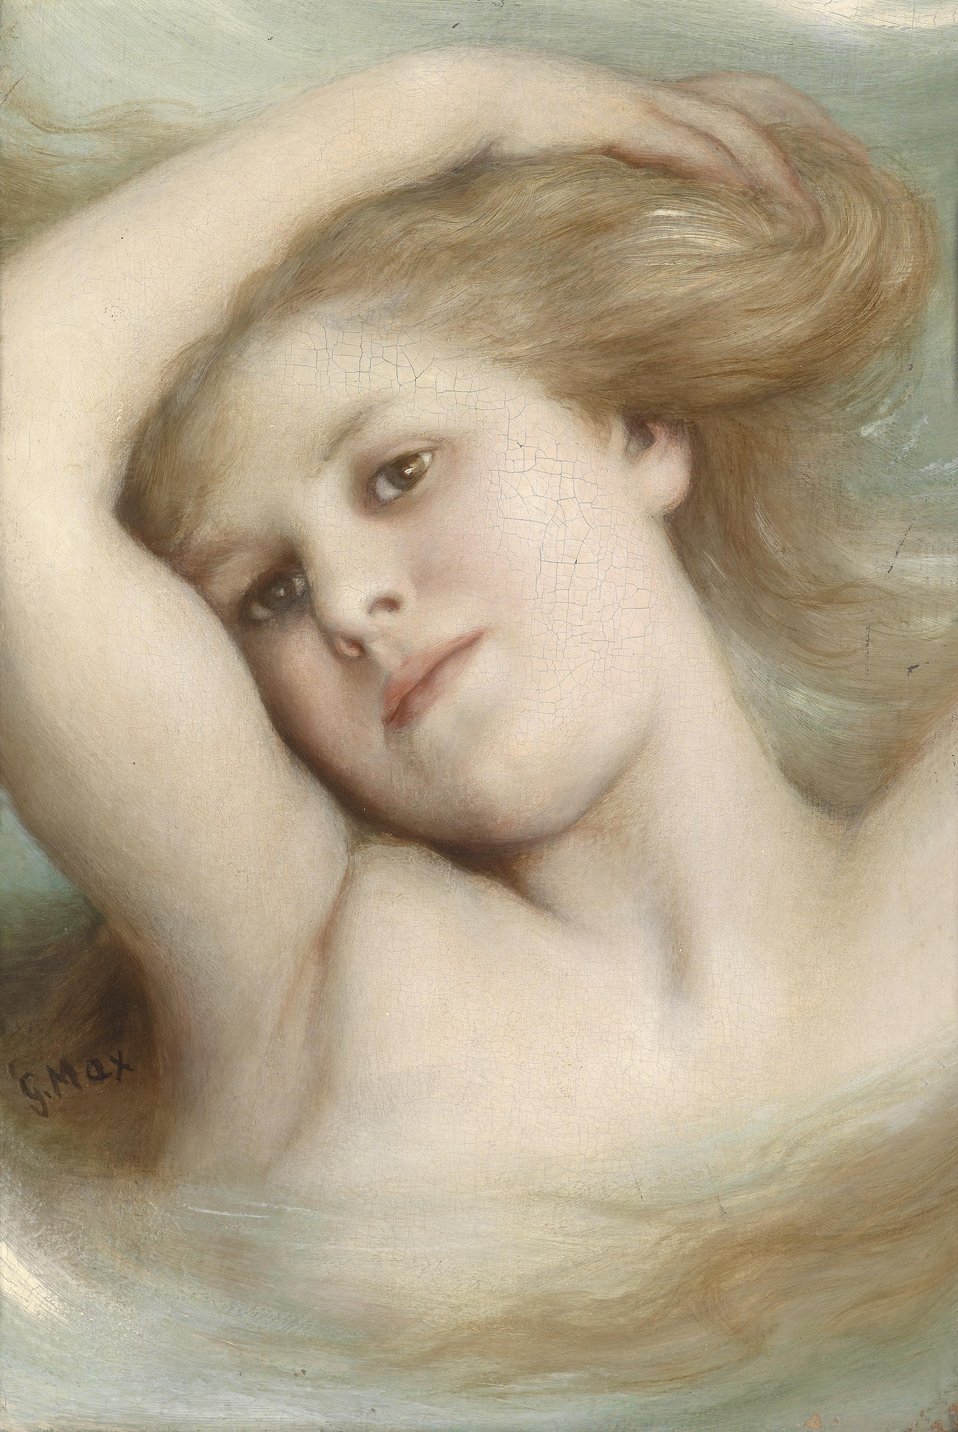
Kopf eines träumenden Mädchens, signiert G. Max, Öl auf Leinwand, 36 x 24,5 cm